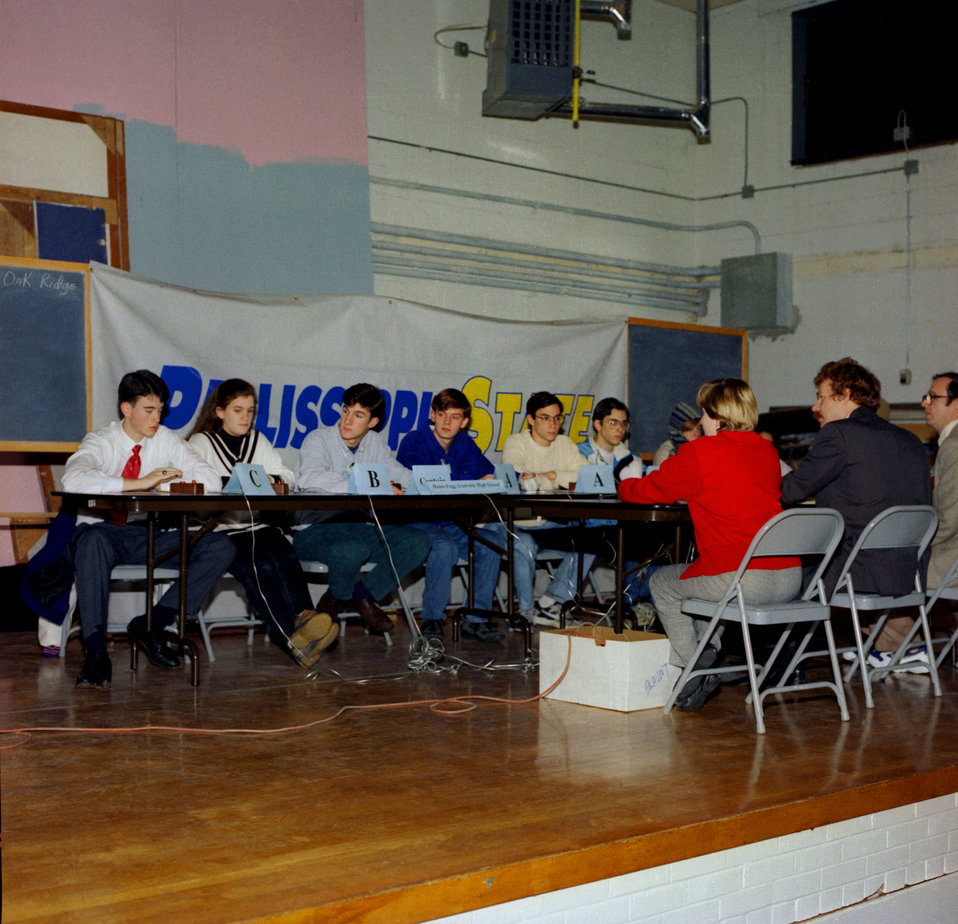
Finals State National Science Bowl Maryville Tennessee

94-88-7 DOE photo Lynn Freeny 1994 Pellippissi State Maryville Tennessee